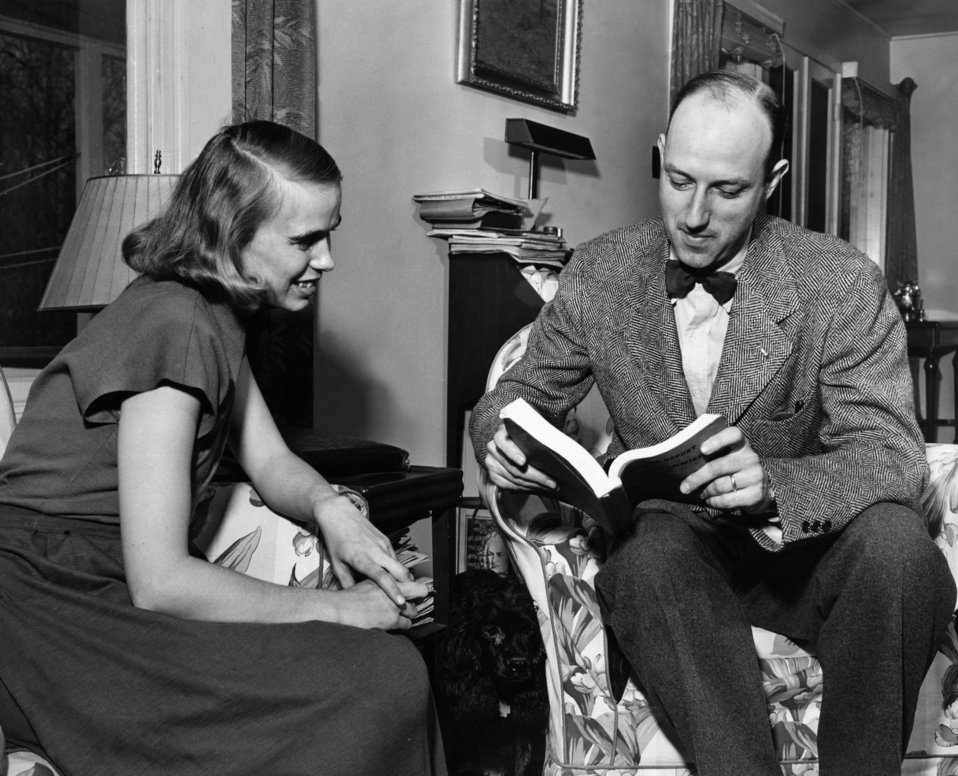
Mary Winter and Richard Hirsh in Oak Ridge

4414-2 DOE photo Ed Westcott 3-26-1948 Oak Ridge Tennessee